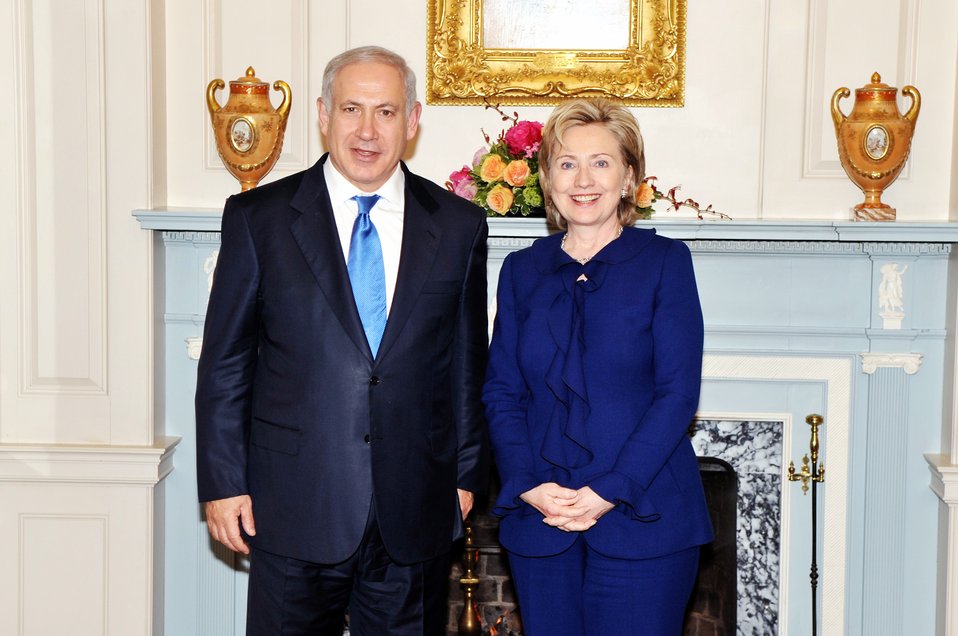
Secretary Clinton Meets With Israeli Prime Minister

U.S. Secretary of State Hillary Rodham Clinton hosts a working dinner for Prime Minister Binyamin Netanyahu of Israel in Washington, DC May 18, 2009.